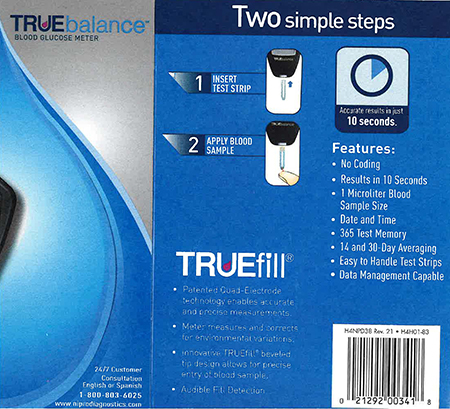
RECALLED – Blood Glucose Meters

January 2, 2014 – Product Recall – Nipro Diagnostics, Inc. Initiates Voluntary Recall of Certain TRUEbalance and TRUEtrack Blood Glucose Meters.